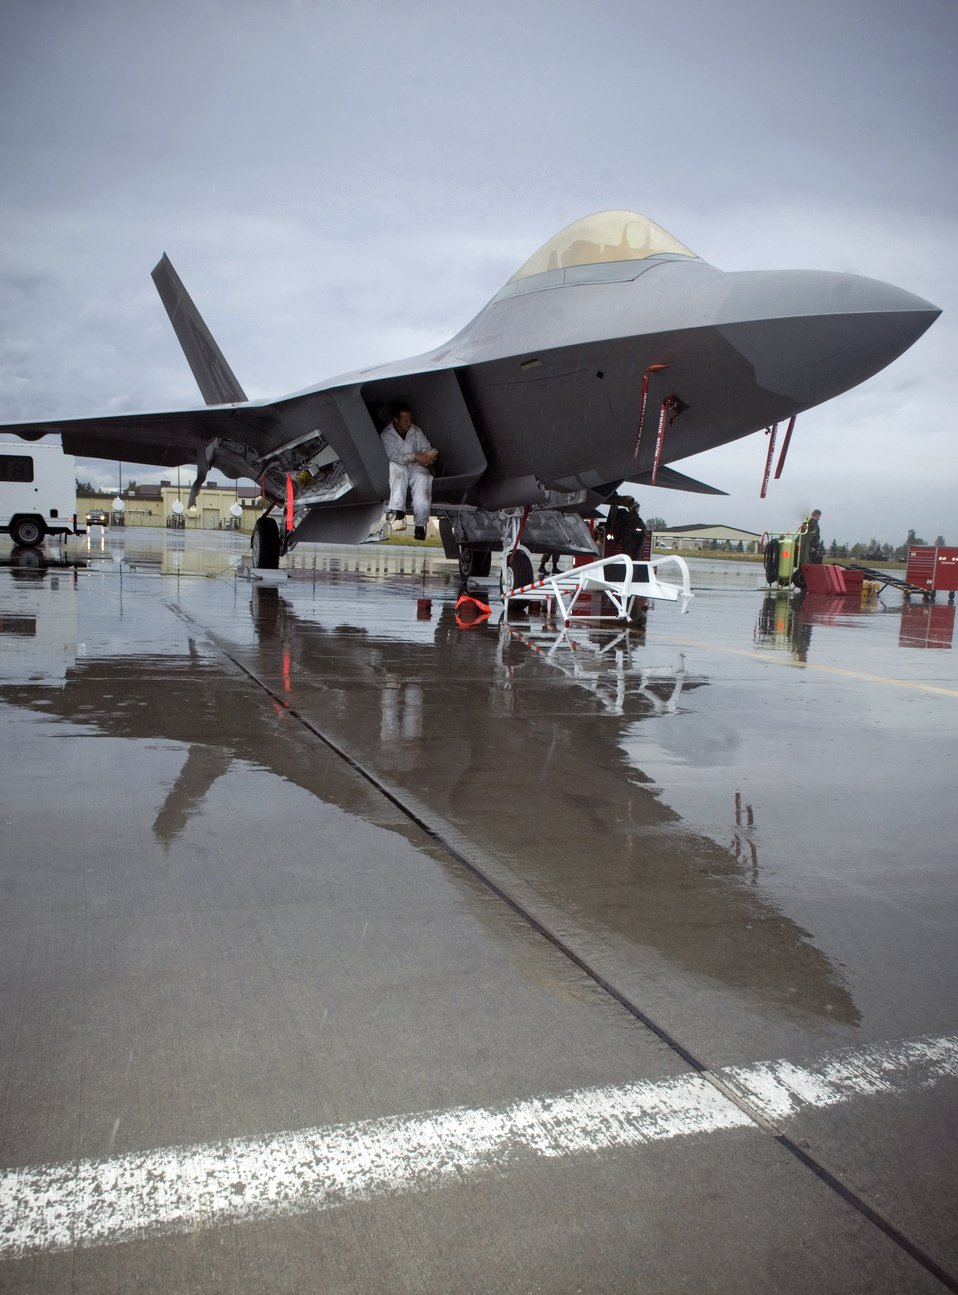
Air Force fighter squadron celebrates 90th year

Staff Sgt. Brian Sarafin finishes suiting up to perform an inspection of the F-22A Raptor's intake exhaust before the demonstration Aug. 20 at Elmendorf Air Force Base, Alaska. The demo was the closing event of the 90th Fighter Squadron's 90th anniversary. Sergeant Sarafin is assigned to 90th Aircraft Maintenance Unit.